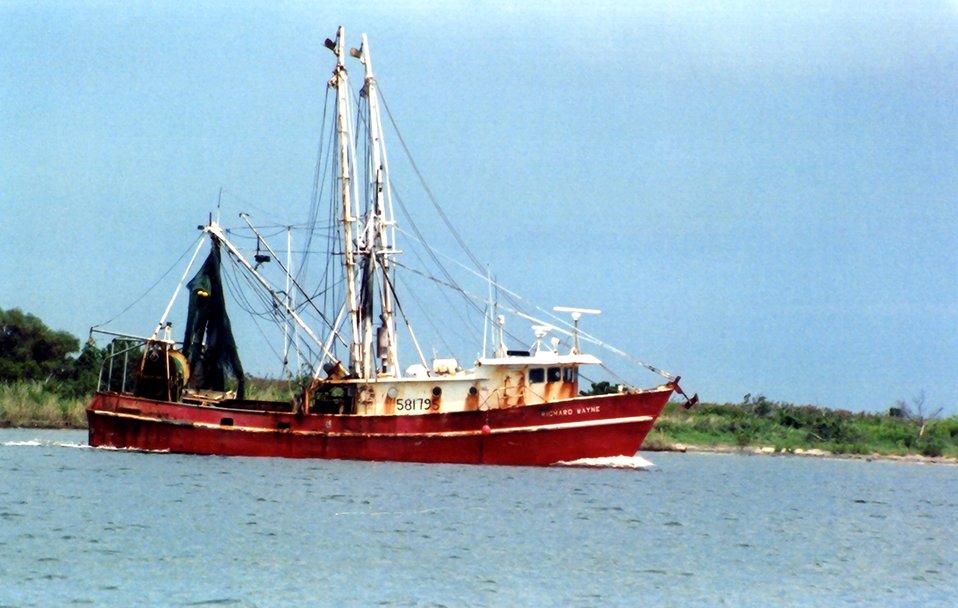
The shrimp boat RICHARD WAYNE in Albemarle Sound.